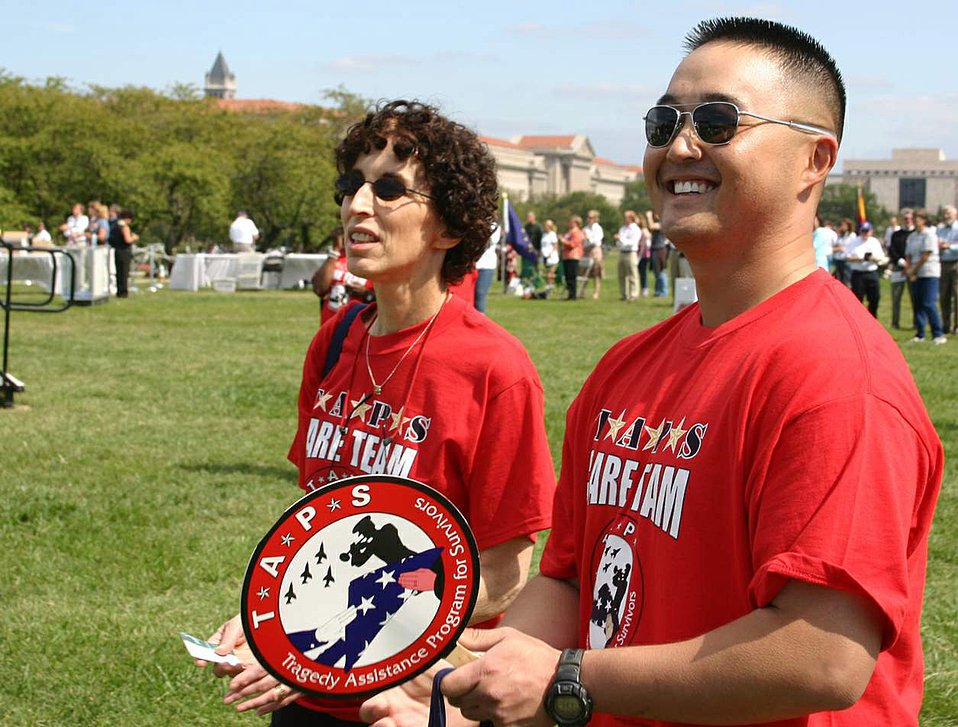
Airmen honor America's fallen

Retired Lt. Col. Charlie Brown (left) and Capt. Peter Mask watch as three F-15 Eagles fly over the National Tribute to Honor America's Fallen and Their Families Sept. 20 in Washington, D.C.